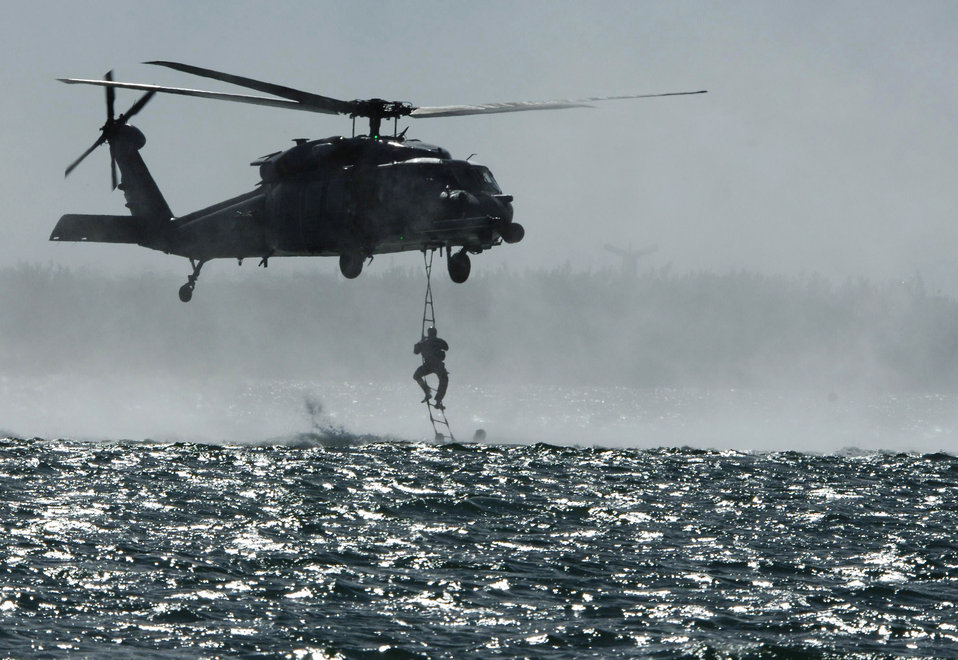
Joint training

An HH-60 Pave Hawk based out of Moody Air Force Base, Ga., hovers over a target area Jan. 9 as elements of the Army special forces along with members of the 38th Rescue Squadron drop into the water for survival and extraction training.